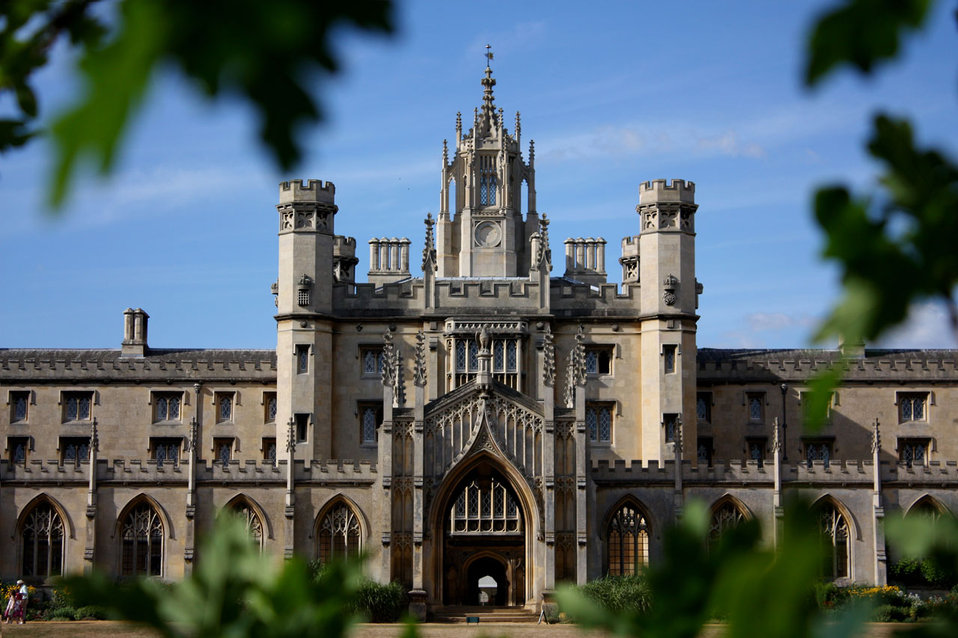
University

St.johns college camrbridge.